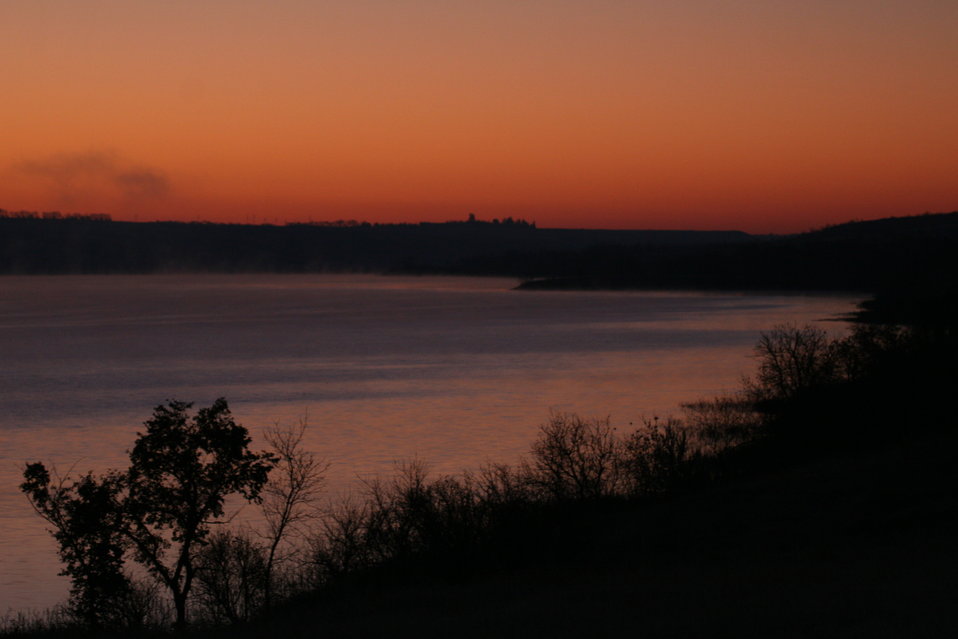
Good Morning from Des Lacs National Wildlife Refuge

A beautiful sunset rises over Des Lacs NWR, in remote North Dakota.